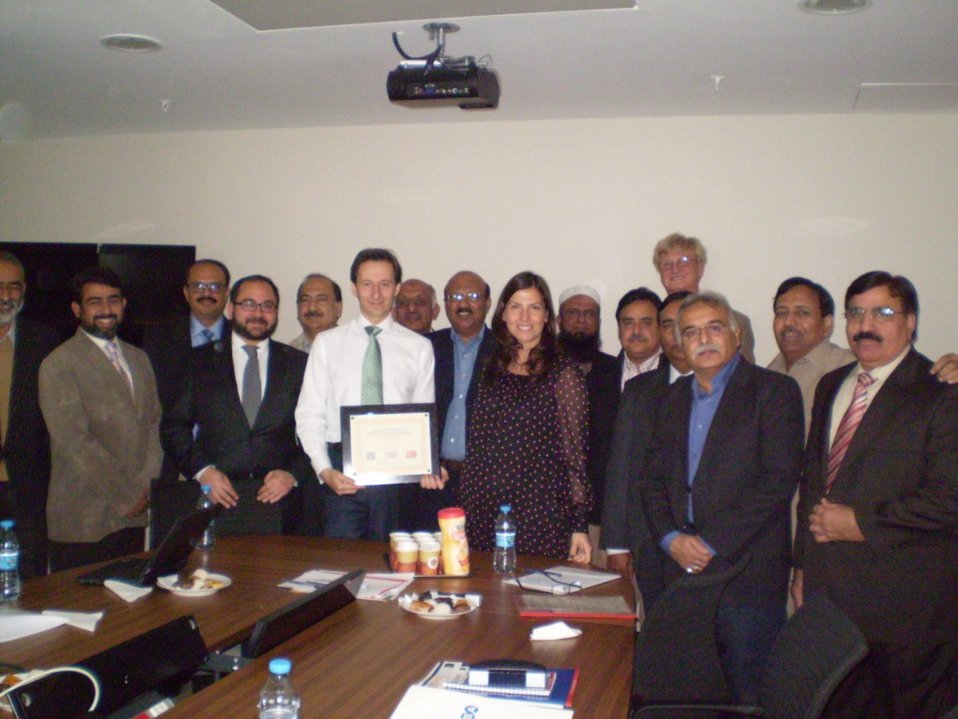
17 Nov - Delegation to Turkey under Utility Exchange Program

USAID Power Distribution Program in liaison with United States Energy Association (USEA) organized a Utility Exchange Program in Istanbul and Ankara Turkey from November 1 2 - 19, 2011.Twelve delegates were selected from 9 DISCOs of Pakistan through a structured nominations and a selection process. The delegates visited the following number of power companies in Turkey:
1. BEDAS - Baskent Electricity Distribution Company, Ankara
2. TEDAS -Turkish Electricity Distribution Company, Ankara
3. AYEDA- Electricity Distribution Company, Istanbul
4. BEDAS - Electricity Distribution Company, Istanbul
The main focus of the Program was learning best practices and functions in Commercial Management, Financial Management and Customer Information Systems.